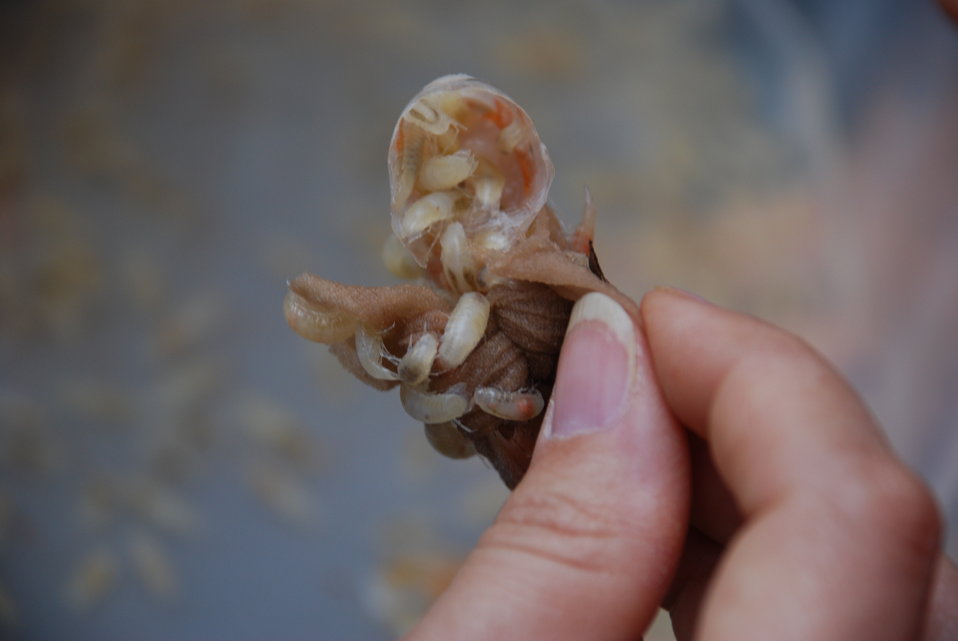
Madison Cave isopods devouring shrimp bait

Shrimp used to bait Madison Cave isopods was devoured in a very short period of time during a survey at Steger's Fissure in Virginia.